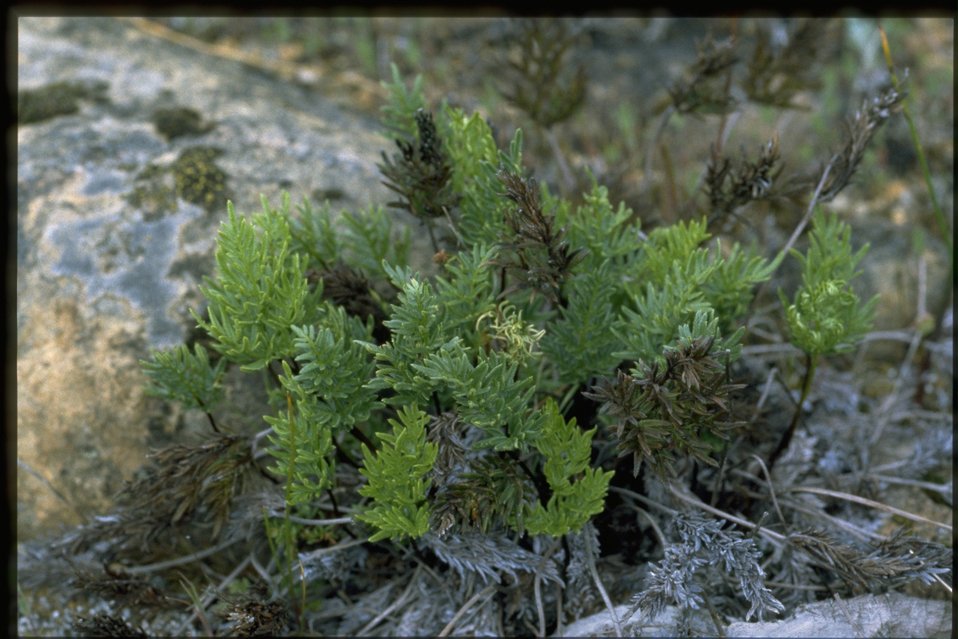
Medium shot of Aspidotsis densa.